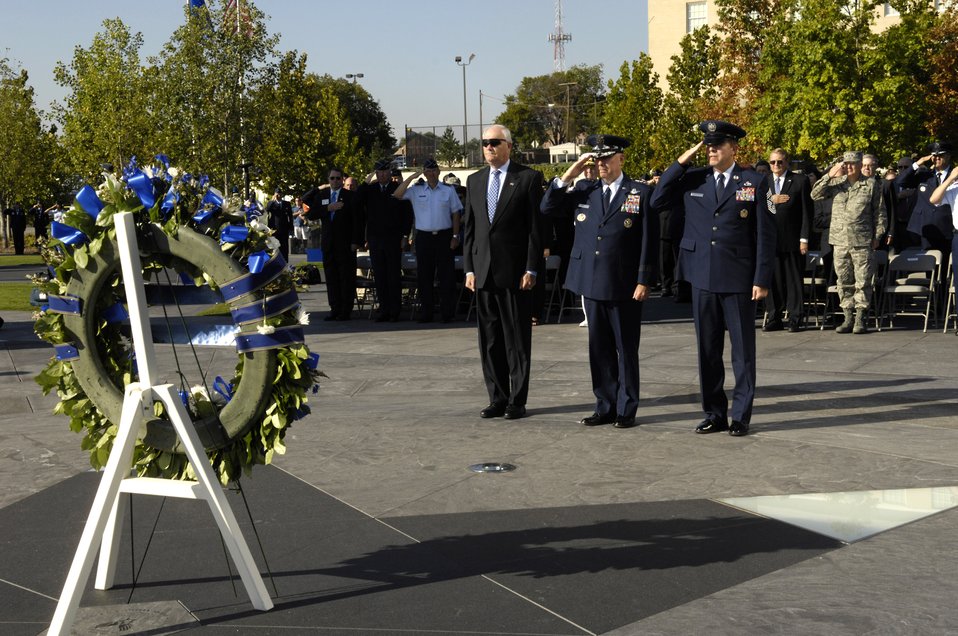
Air Force leaders gather at memorial for anniversary

Secretary of the Air Force Michael W. Wynne, Air Force Chief of Staff Gen. T. Michael Moseley and Chief Master Sgt. of the Air Force Rodney J. McKinley pay their respects during the wreath-laying ceremony Sept. 18 at the Air Force Memorial in Arlington, Va., in honor of the 60th anniversary of the Air Force.